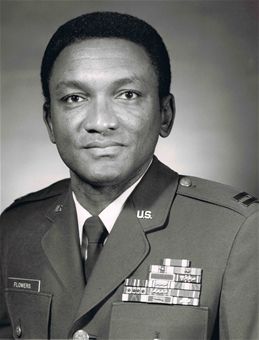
Maj. Gen. Alfred K. Flowers

Alfred K. Flowers spent 13 years as enlisted before going on to retire as a major general after 46 years of service.